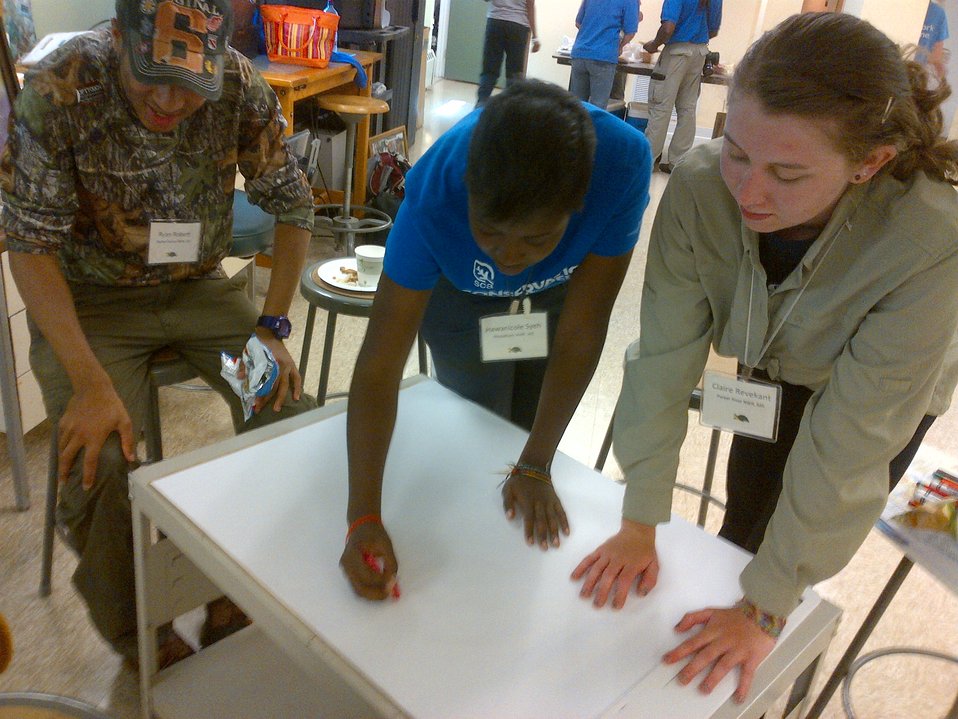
Challenge Groups

Claire, Hawanicole and Ryan work on their visuals for their Challenge Project.